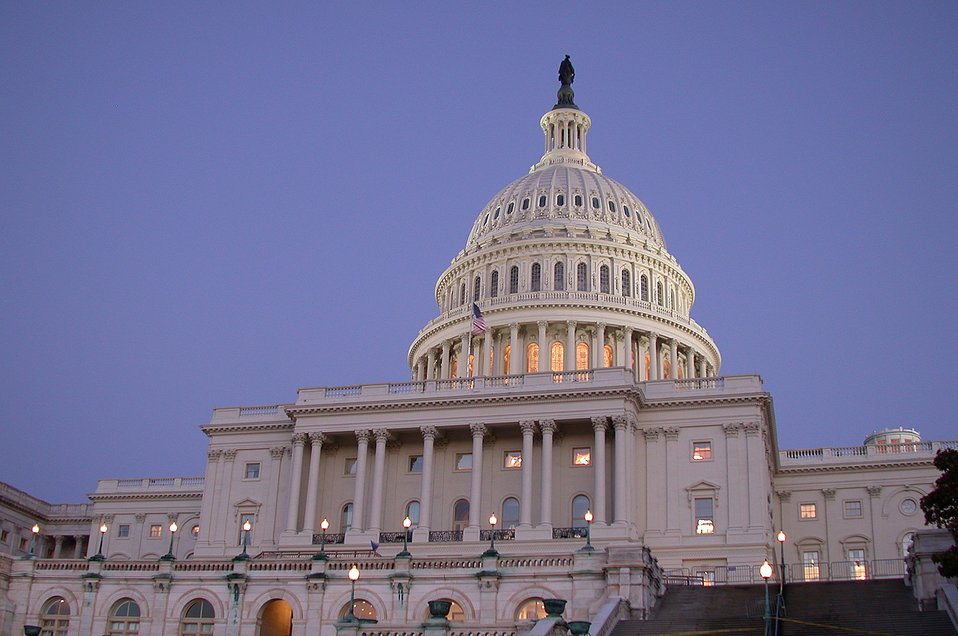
United States Capitol building.